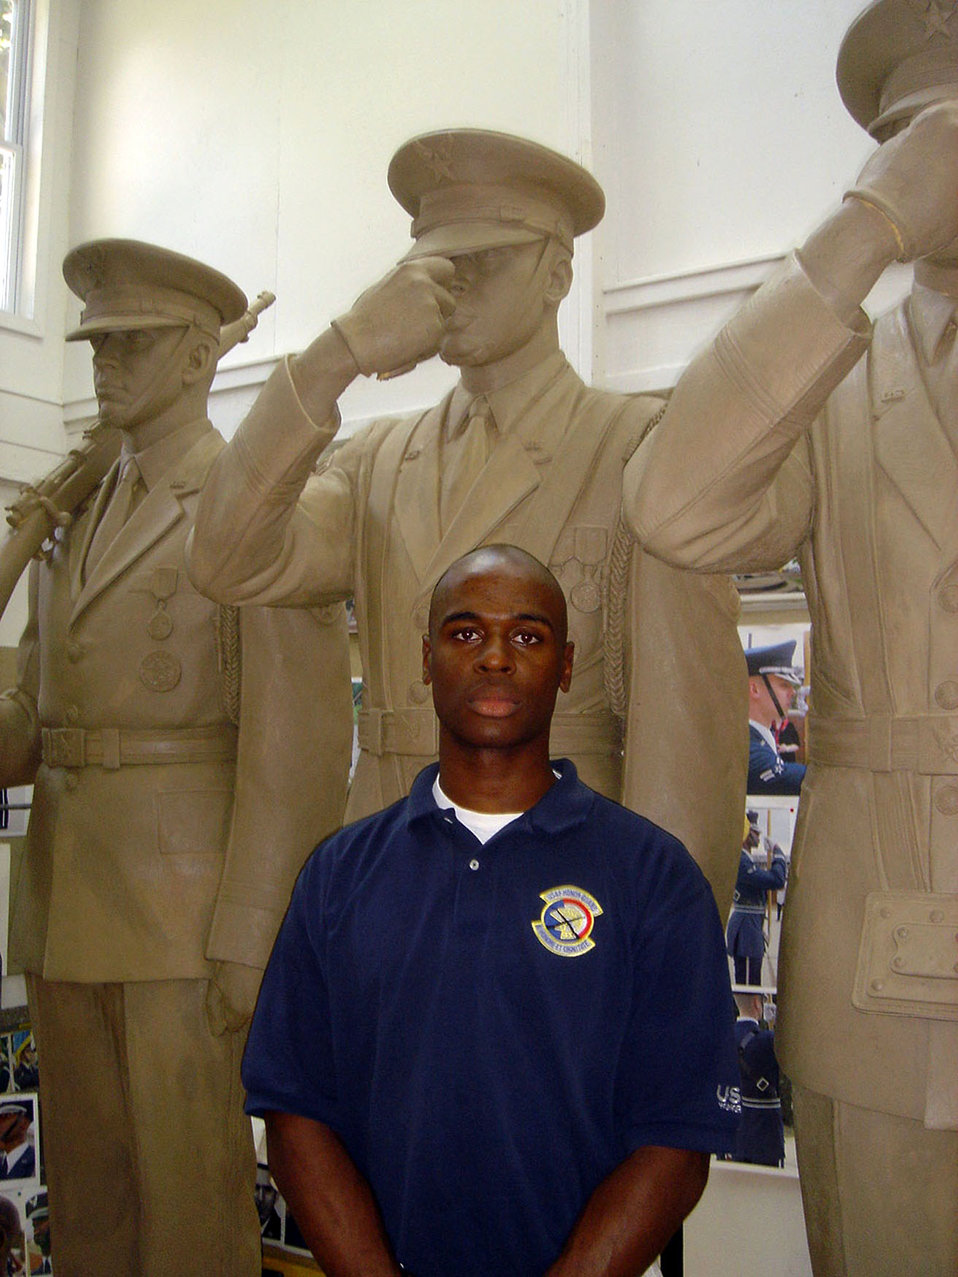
Airman a 'model' honor guard member

Senior Airman Michael Goodwin stands in front of the Air Force Honor Guard statue while still in production in July 2005. Airman Goodwin was used as a model for one of the bronze sculptures now residing at the Air Force Memorial.